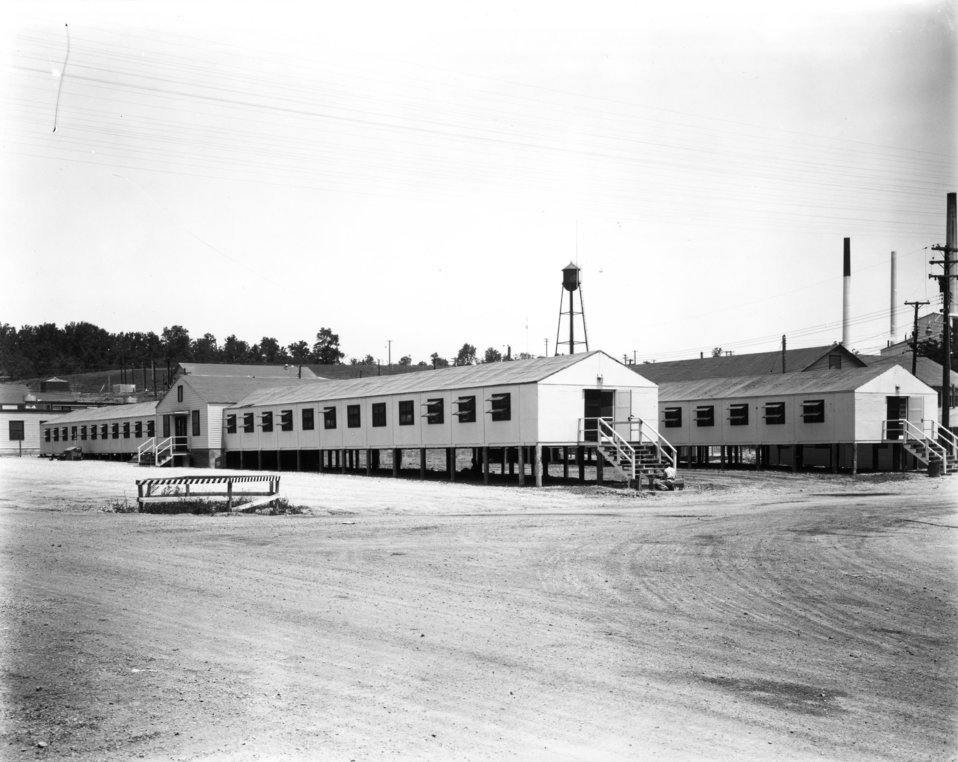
X-10 at Oak Ridge